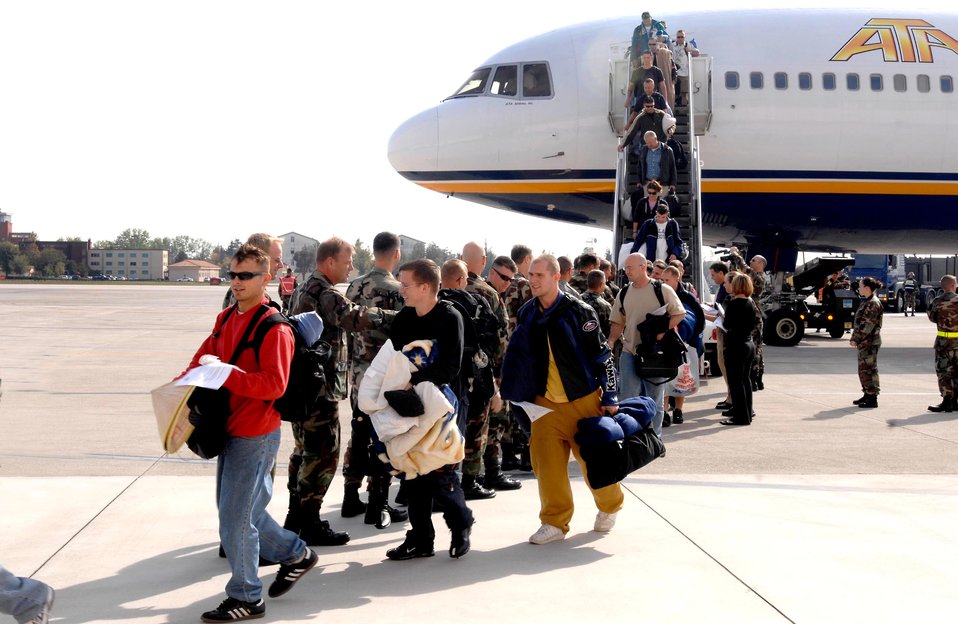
Returning warriors welcomed home

More than 230 Airmen return home Oct. 9 to Aviano Air Base, Italy, from a four-month deployment at Kunsan Air Base, South Korea.